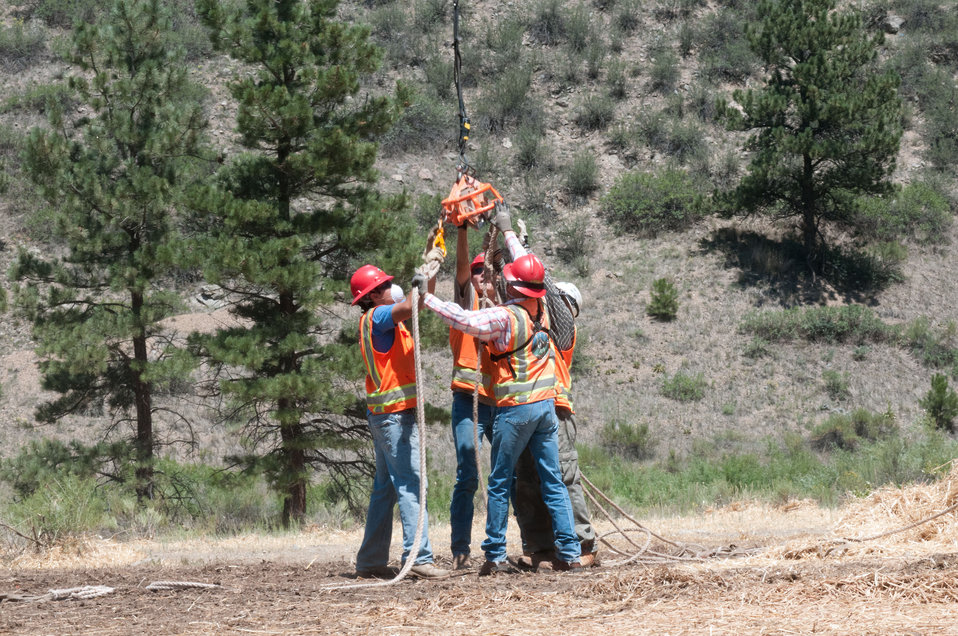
Load crews attach 100-150 foot ropes of a cargo net to a release mechanism hanging under a helicopter during the continuing aerial application of straw to mitigate soil and ash runoff from the mountainous terrain leading to Seaman Reservoir, drinking water resource for the City of Greeley, on Friday, July 20, 2012. Bell UH-1H (2-blade rotor) and A-Star Model B (3-blade rotor) aircraft were launched from a landing zone at the foot of the reservoir spillway. Pilots Randy Mason and Terry Richards in the Bell 204 and Tim Booth in the A-Star use their keen depth perception and piloting skills to keep their straw loads at the end of 100-150-foot cable above the trees and hilltops as they transport and release loads of certified straw weighing 1,400 – 2,000 pounds. 4-person load crews and heavy equipment operators with hydraulic hay fork grapple attachments make easy work of unloading 1,000 pound straw bales from tractor trailer rigs, stack them near the pickup point, then bring the bales onto cargo nets, open then loosen and adjust the load weight on the cargo nets for helicopters to lift and drop them onto barren, burned out tributary lands. Forest service lands received straw, while private and other lands receive a seed mix and straw to promote ground cover plant growth on ash-covered lands. In total, 1,800 tons of straw will be applied during the 14-day operation. One quarter of the cost was paid by the City of Greeley and the U.S. Department of Agriculture funded the remainder. The Hewlett Gulch Fire was started by a camper’s alcohol stove, on May 14, at the saddle of a picturesque mountain ridge along the Hewlett Gulch Trail of Poudre Canyon, in the Roosevelt National Forest, 60 miles north of Denver. At it’s more than 400 firefighters were battling fires being pushed by 50 mph winds that helped blacken over 12-square-miles of dry ground cover, brush and trees. Many of the trees were already dead and tinder dry from beetle-kill. The water in the reservoir remains clean and clear, while downstream water flow has gone from famous Colorado clear water to nearly black flows of water heavily laden with ash, silt, and burnt debris that recent thunderstorms have already washed down from the mountainsides.